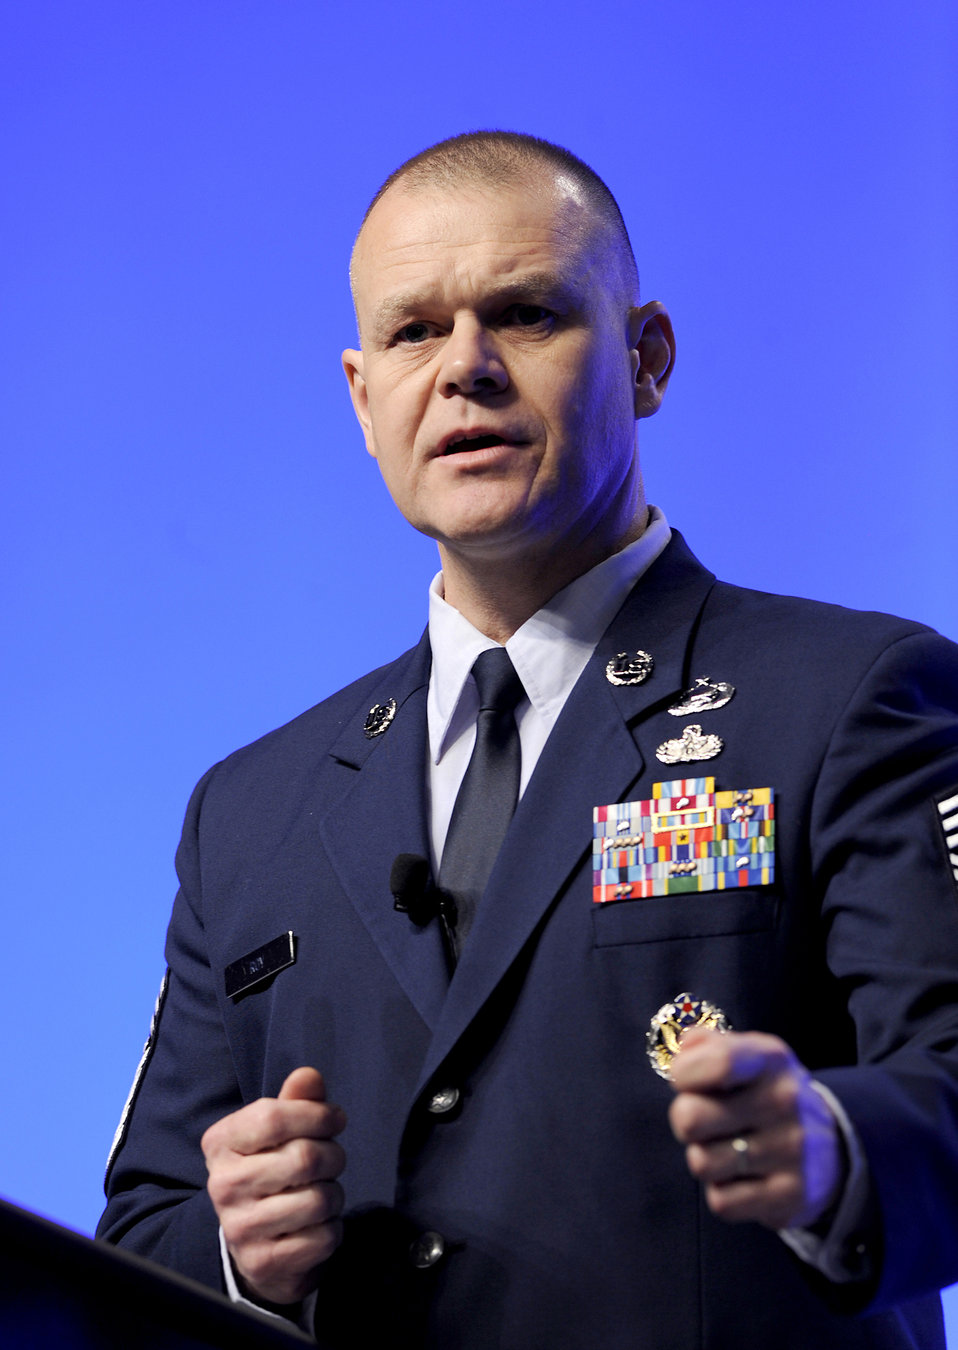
CMSAF discusses need for strengthened resiliency at symposium

Chief Master Sgt. of the Air Force James Roy speaks Feb. 17, 2011, in Orlando, Fla., during the Air Force Association's 2011 Air Warfare Symposium and Technologies Exposition. Chief Roy spoke about building resiliency in Airmen and their families.